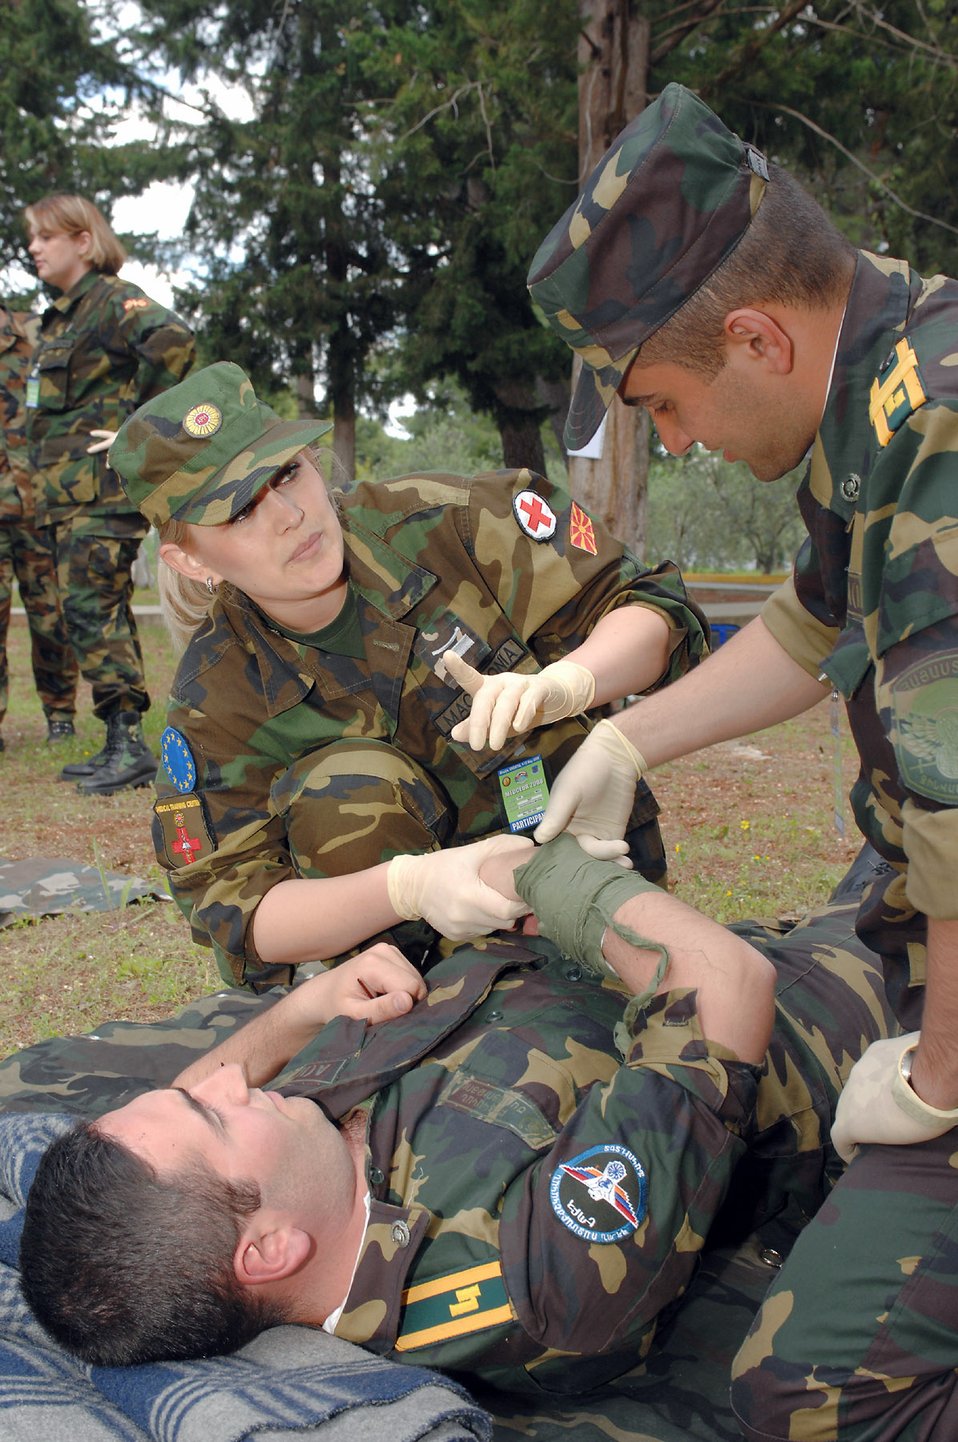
Medical training exercise supports partnership for peace

Macedonian Army Sgt. Milena Velickovska discusses different techniques of Self-Aid and Buddy Care May 3 with cadets Vahe Petrosyan (lying down) and Arsen Adonc from the Military Medicine Faculty of the Armenian Medical University during the 2008 Medical Training Exercise in Central and Eastern Europe. Croatia is hosting the 2008 exercise which has drawn about 400 multi-nationals in support of the Partnership for Peace initiative.